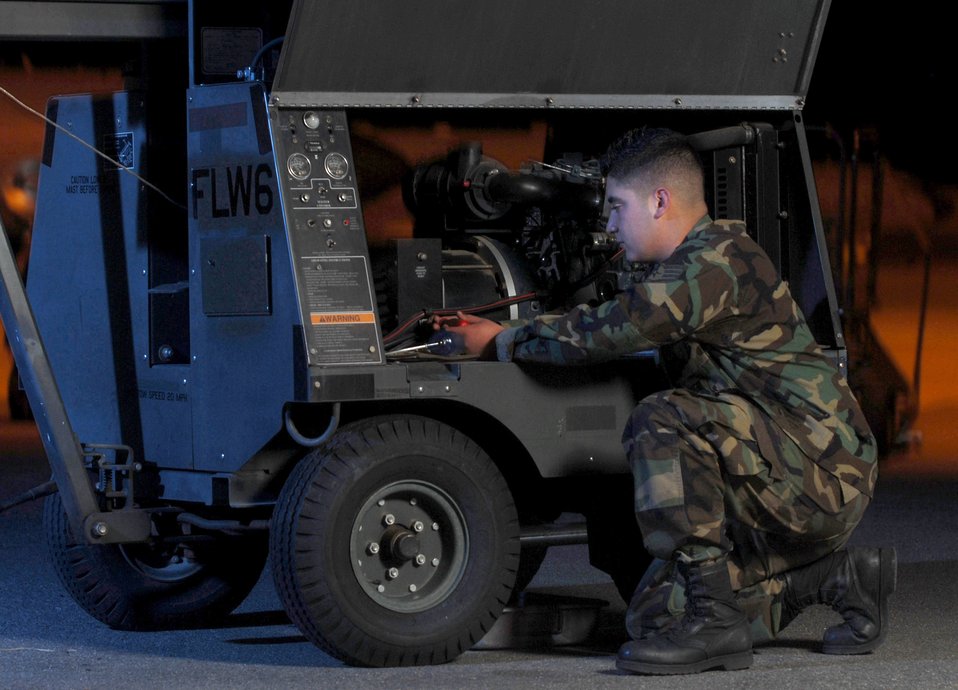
AGE makes a difference

Staff Sgt. Jesus Fernandez inspects lighting equipment Dec. 5 at March Air Reserve Base, Calif. Sergeant Wilson, an aircraft generation equipment technican from the 452nd Maintenance Squadron, is an air Reserve technician here. Air Reserve technicians are full-time civilian employees of the Air Force who must maintain active status as reservists in the Air Force Reserve unit in which they are employed. They are permanent employees who, in the event of mobilization, are available for active duty in their assigned military position. They are essential for the operational readiness of their Reserve unit.